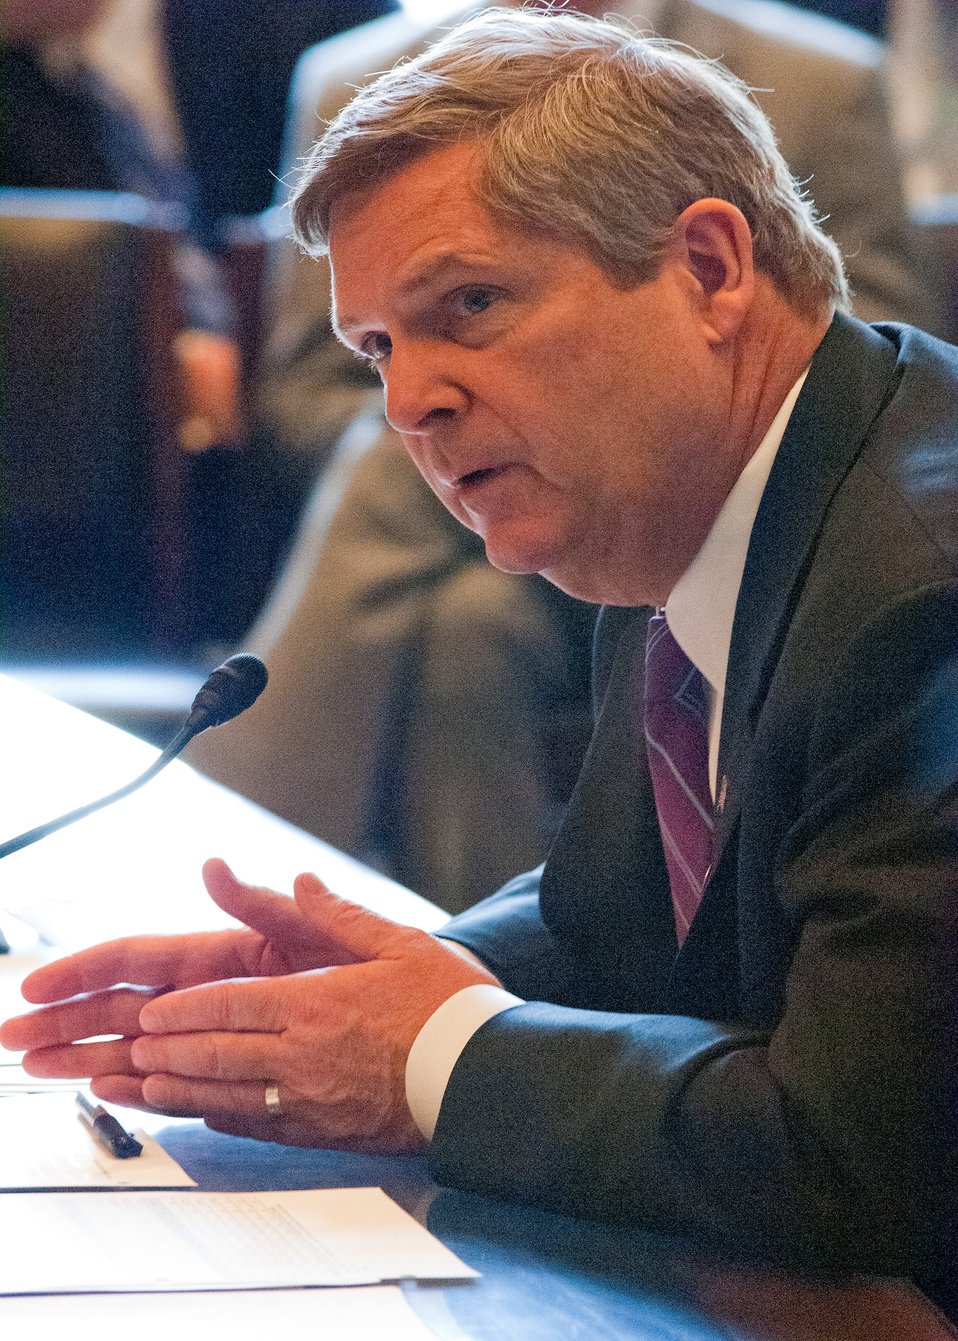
Agriculture Secretary Tom Vilsack testified on the “State of the Ag Economy” at a House Agriculture Committee hearing in the Longworth House Office Building in Washington, D.C., Thursday, February 17, 2011. Secretary Vilsack said at the end of his opening statement that, “As we enter 201, the U.S. farm economy is coming off unprecedented increases in U.S. agricultural exports, farm cash receipts, farm income, and asset values the past few years. Prospects for the coming year generally look bright.”